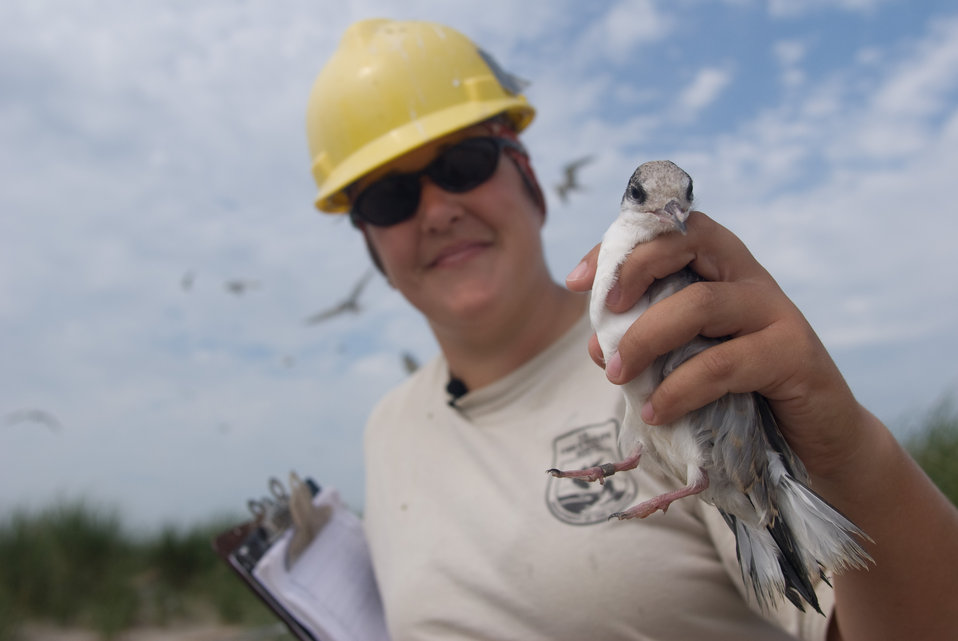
Service employee holding a tern at Monomoy National Wildlife Refuge

A U.S. Fish and Wildlife Service employee holding a tern at Monomoy National Wildlife Refuge in Massachusetts.